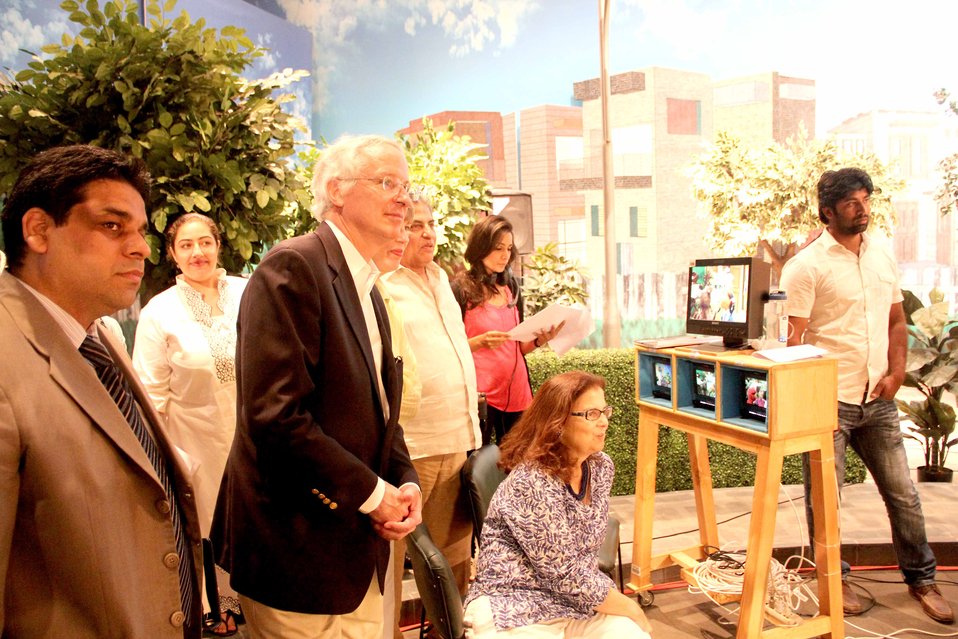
U.S. Ambassador’s Visit to Sim Sim Hamara Highlights U.S. Commitment to Improved Children’s Education in Pakistan at Lahore on 28 April, 2012